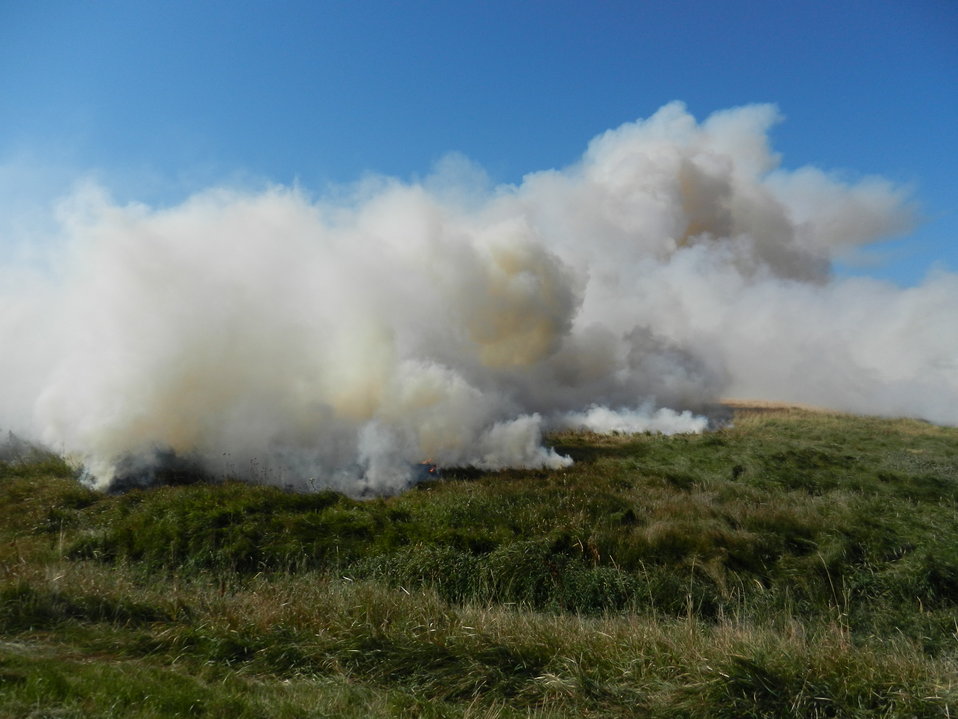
Fall Prescribed Burning on Des Lacs Refuge

The U.S. Fish and Wildlife Service (FWS) has been using and managing fire safely and cost-effectively since the 1930's, leading to lands being in healthier ecological condition overall, with lower risk of damaging fire. This long-term, balanced approach to fire management benefits both people and wildlife.

Here, Refuge staff applied fire to Habitat Unit 35 of Des Lacs NWR to restore grassland habitat on the Refuge.